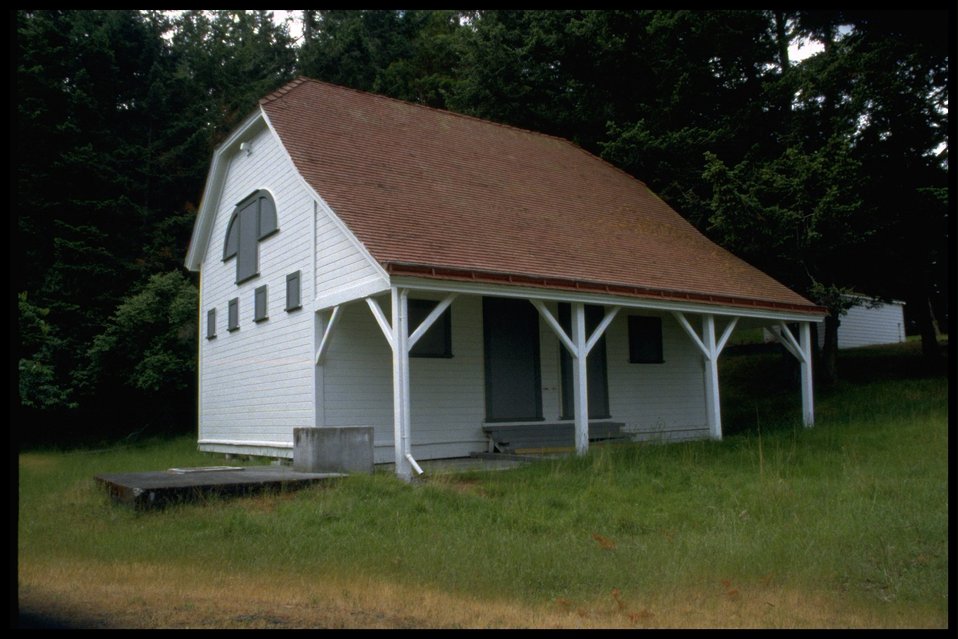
The barn at Turn Point.